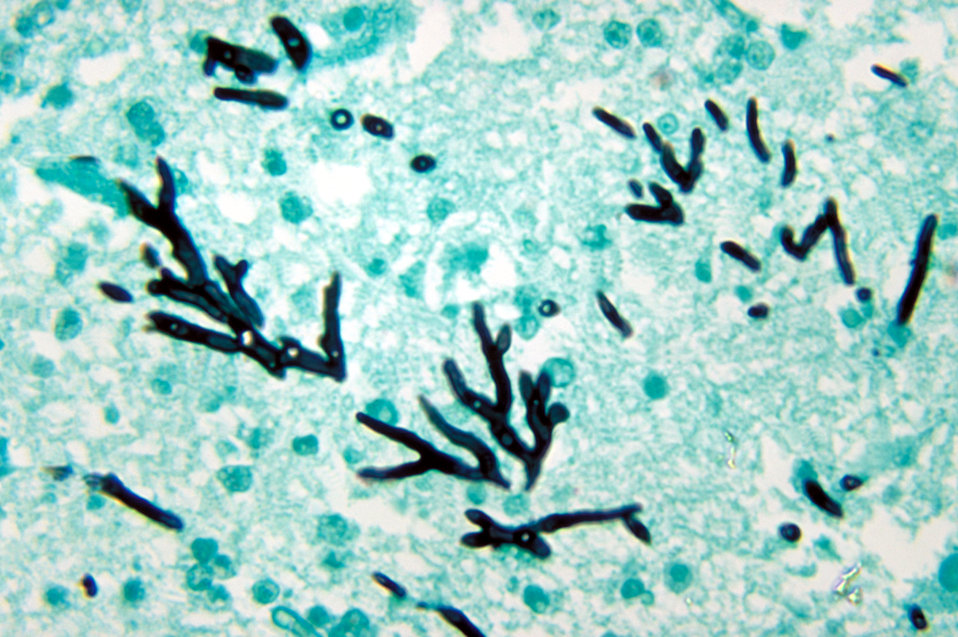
Note the aspergillosis associated histopathologic changes in this turkey poult brain tissue due to Aspergillus fumigatus.